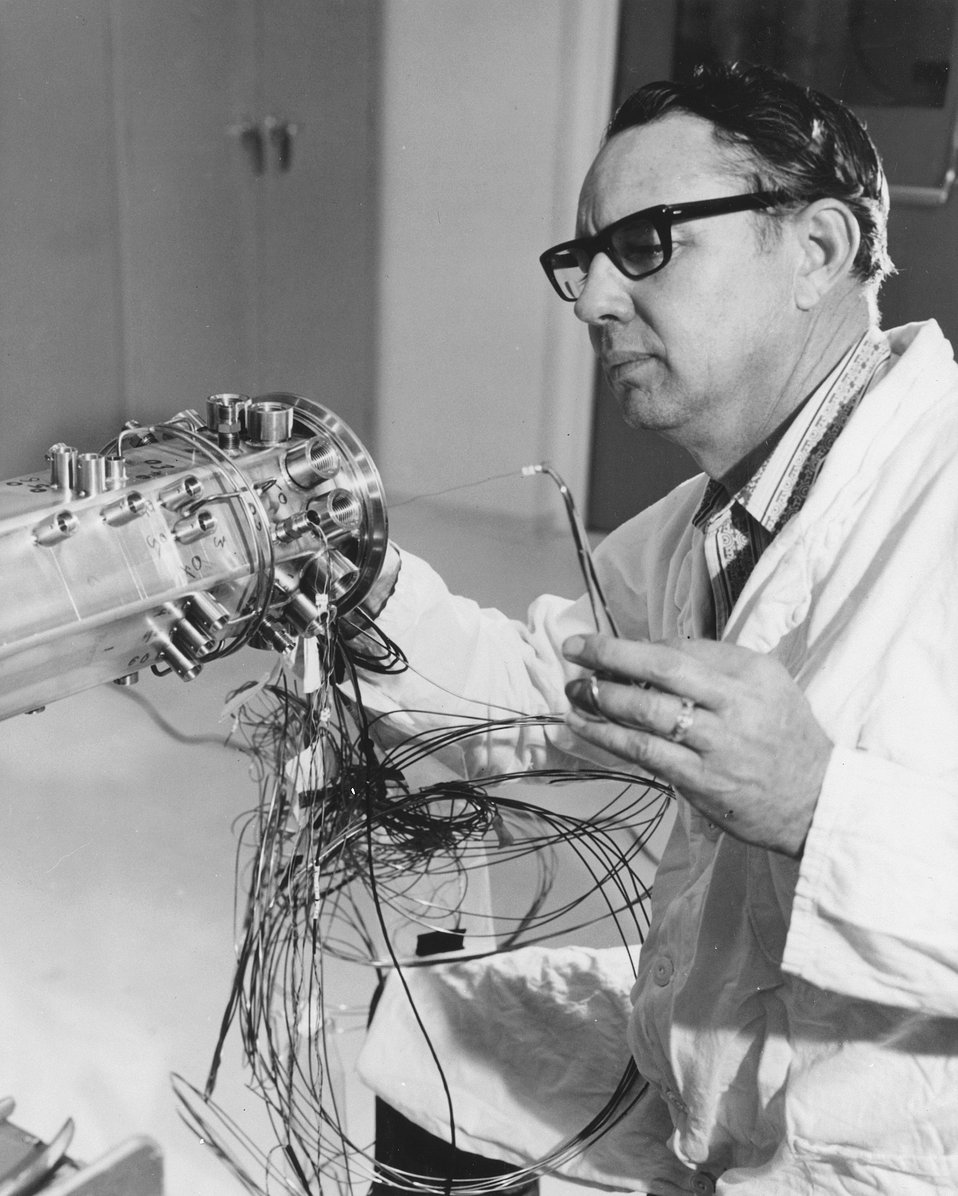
Like a surgeon, a technician at the U.S. Atomic Energy Commission's Hanford Engineering Development Laboratory wires a breeder reactor fuel assembly duct for a vibration test. c. 1971